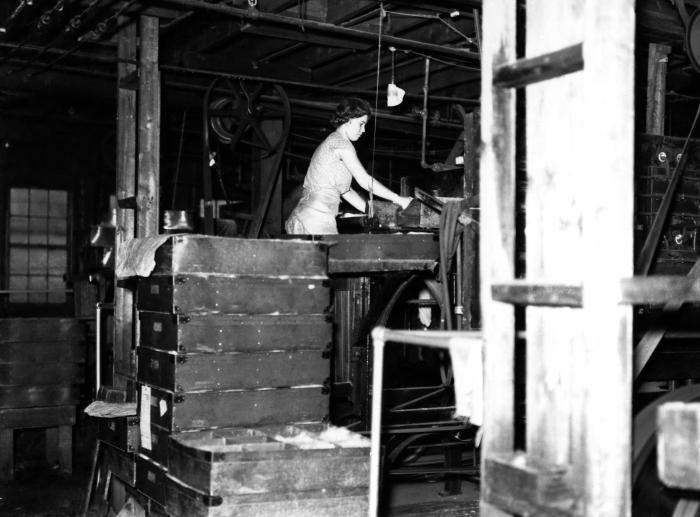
Provided by the Center for Disease Control's (CDC), National Institute for Occupational Safety and Health (NIOSH), this historic image, shot inside a Connecticut hat manufacturing plant, depicted a female worker as she was at her workstation performing an unidentified task on a hat-assembly line. This worker was not wearing a protective filtered breathing mask, goggles, or gloves. Working with newly processed fur, which had been 'carroted', or fixed with mercury nitrate, workers could be exposed to airborne mercury, thereby, suffering the detrimental neurologic consequences from its inhalation. Using steam, which was integral to the hatters' industry, the airborne dissemination of this neurotoxic element was facilitated.